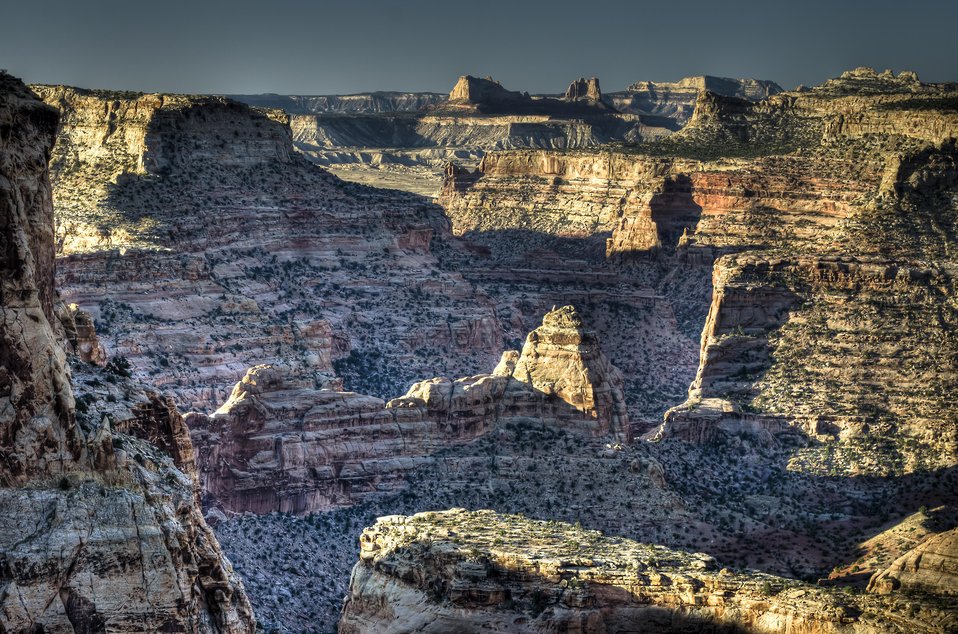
San Rafael River Overlook

The Colorado Plateau covers large portions of CO and UT. Drained by the Colorado River and its tributaries, it is a landscape of desert canyons, plateaus and mountains. It is home to a number of endangered and threatened species found only in the Mountain-Prairie Region of the U.S. Fish and Wildlife Service.

Credit: Larry Crist / USFWS

Photo Contest Entry #54